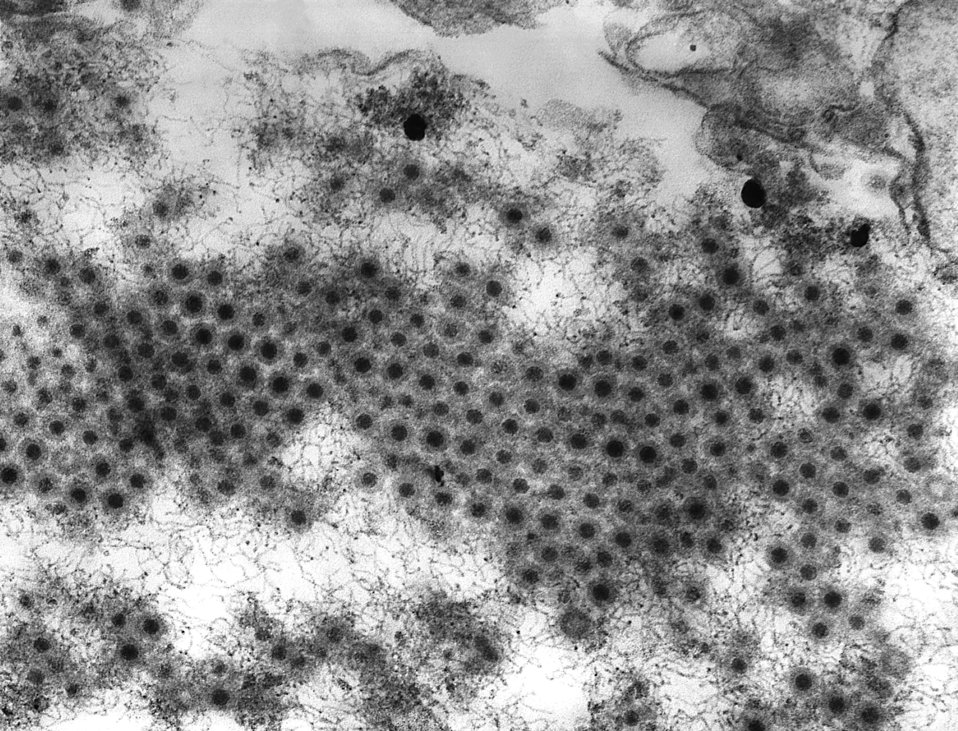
This negatively-stained transmission electron micrograph (TEM) revealed the presence of numerous Reovirus type-3 virions. This virus organism is a member of the family, Reoviridae, genera of which include the Coltivirus, i.e., Colorado tick fever, Orbivirus, i.e., bluetongue virus, and Orthoreovius, within which belong these virions.